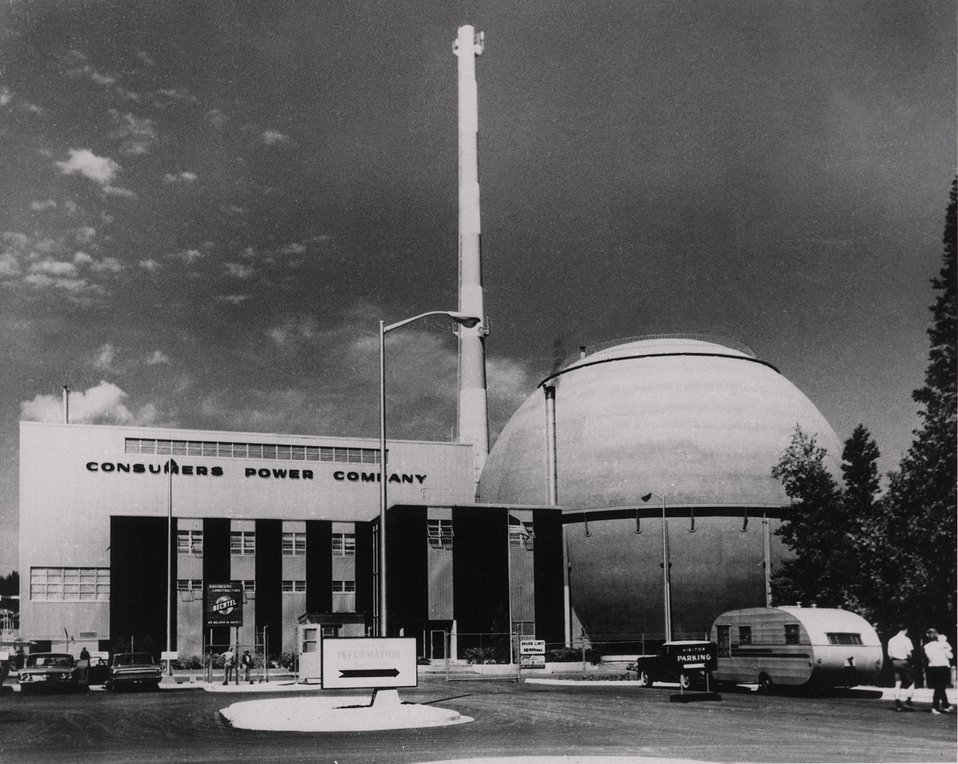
Consumer Power Company's 50,000-75,000 kilowatt station located near Charlevoix, MI went on line the first time December 1962, achieved full power March 1963.